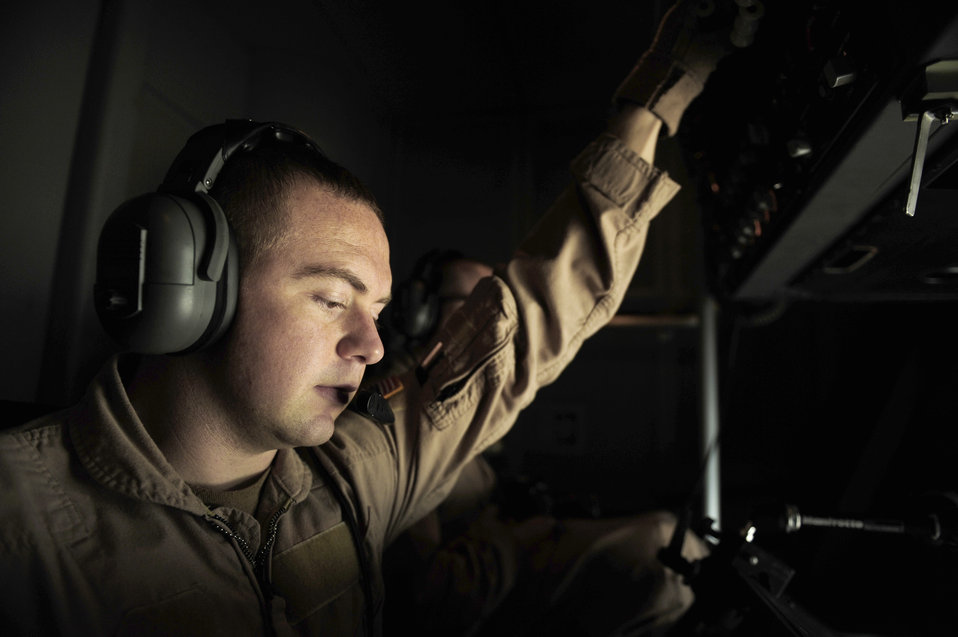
Refueling the joint fight

Staff Sgt. Erin Keogh goes through system checks before refueling aircraft Nov. 25, 2010, over Afghanistan in support of Operation Enduring Freedom. Sergeant Keogh is a KC-10 Extender boom operator assigned to the 908th Expeditionary Air Refueling Squadron.